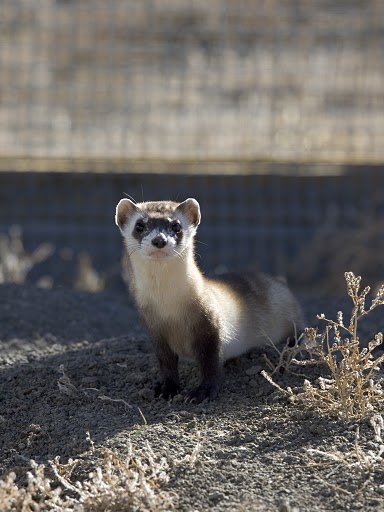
Black-footed Ferret in Pen

Preconditioning is an important pre-cursor to reintroducing captive bred black-footed ferrets into the wild. Ferrets are placed in outdoor pens for a minimum of 30 days. While in these pens, they are exposed to natural burrow systems and have the opportunity to encounter live prairie dogs. Most preconditioning is conducted at the National Black-footed Ferret Conservation Center in Colorado.